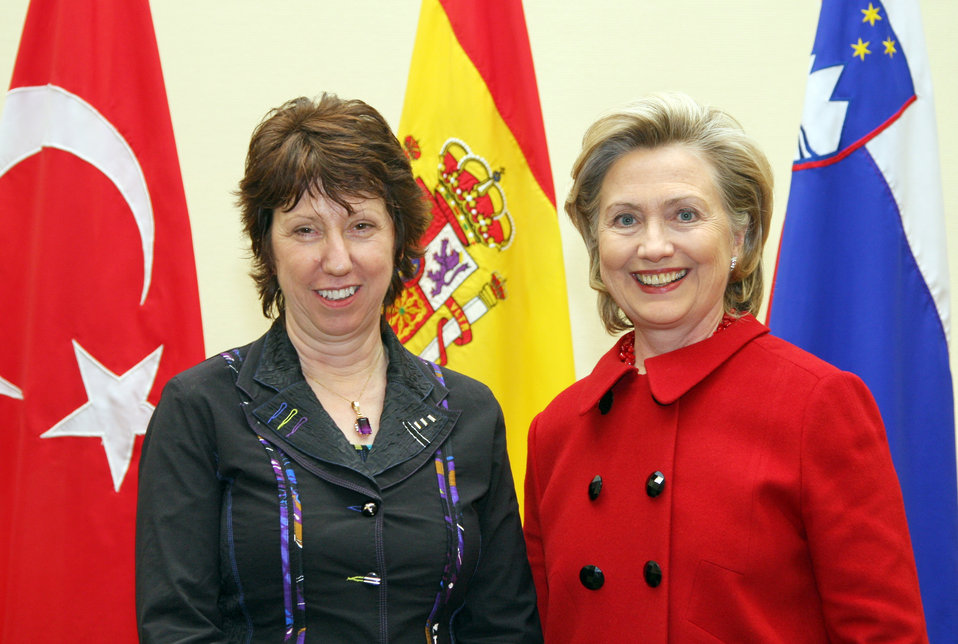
Secretary Clinton Meets With EU High Representative for Foreign Affairs and Security Policy

U.S. Secretary of State Hillary Rodham Clinton between meetings at NATO headquarters in Brussels, Belgium December 4, 2009.